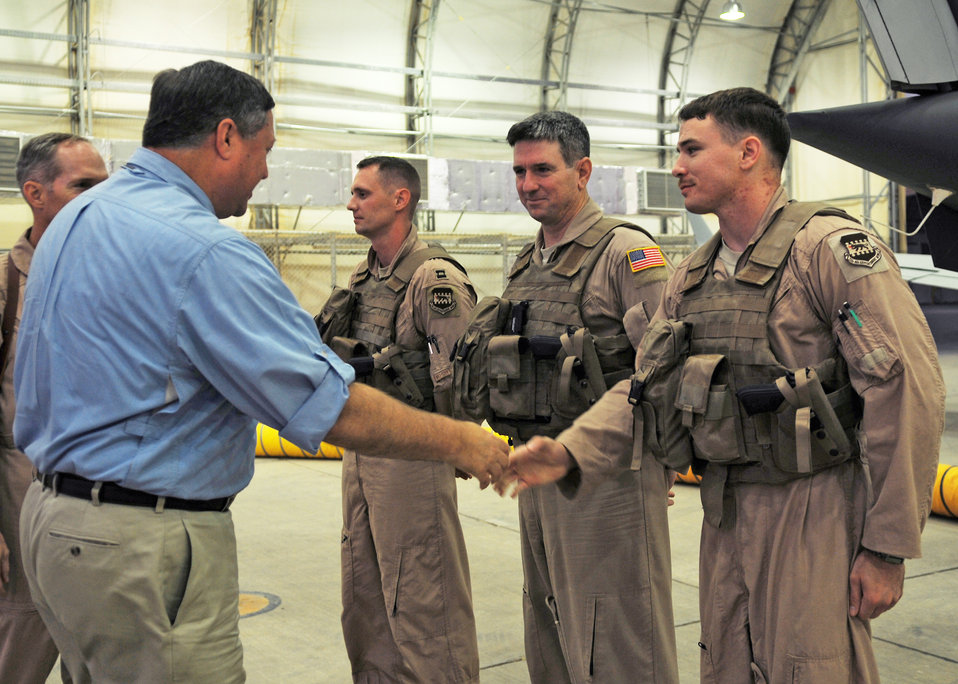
Secretary Donley tours Joint Base Balad

Secretary of the Air Force Michael Donley greets an MC-12 Liberty aircrew, Aug. 27 during a tour of Joint Base Balad, Iraq. Capt. Matthew Eldredge (from left), Senior Master Sgt. Bruce Hunter and Senior Airman Matt Jones are assigned to the 362nd Expeditionary Reconnaissance Squadron. A 362nd ERS aircrew flew the MC-12's first combat mission June 12. The unit now operates six MC-12s and provides real-time full-motion video and signals intelligence that allows military leaders to make rapid battlefield decisions. Secretary Donley visited the base to meet with the Airmen there and also to observe the MC-12 mission.